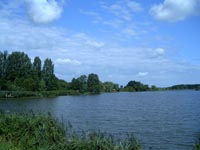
Magyar: A kutasi halastó (szabad felhasználás, saját fotó)